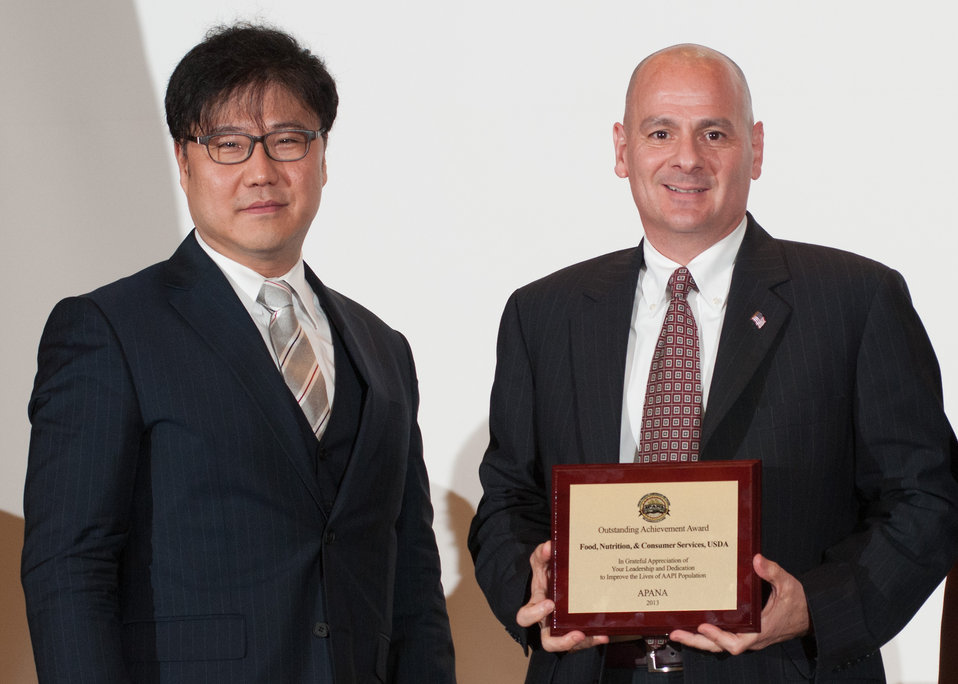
Asian Pacific American Network in Agriculture (APANA) President Justin Rhee, left, presents an “Outstanding Achievement Award” for leadership and dedication to improve the lives of the Asian Americans and Pacific Islander (AAPI) population, to U.S. Department of Agriculture’s (USDA) Food and Nutrition Service (FNS) Management, Technology & Finance Associate Administrator Jeffrey Tribiano, who is accepting for Food, Nutrition, and Consumer Services (FNCS) Under Secretary Kevin Concannon and FNS Administrator Audrey Rowe, during the USDA Asian Pacific American Heritage Month Observance, at the USDA headquarters in Washington, D.C., on Thursday, May 23, 2013. FNS enhanced the accessibility of USDA programs and services for the AAPI population by working with States to educate the AAPI community about nutrition assistance programs and nutrition education resources. FNS also provided significant technical assistance to State agencies and community nonprofits, including language line services, interpreter services and training for better accessibility. This year’s theme is “Building leadership; Embracing the Cultural Values and Inclusions.”